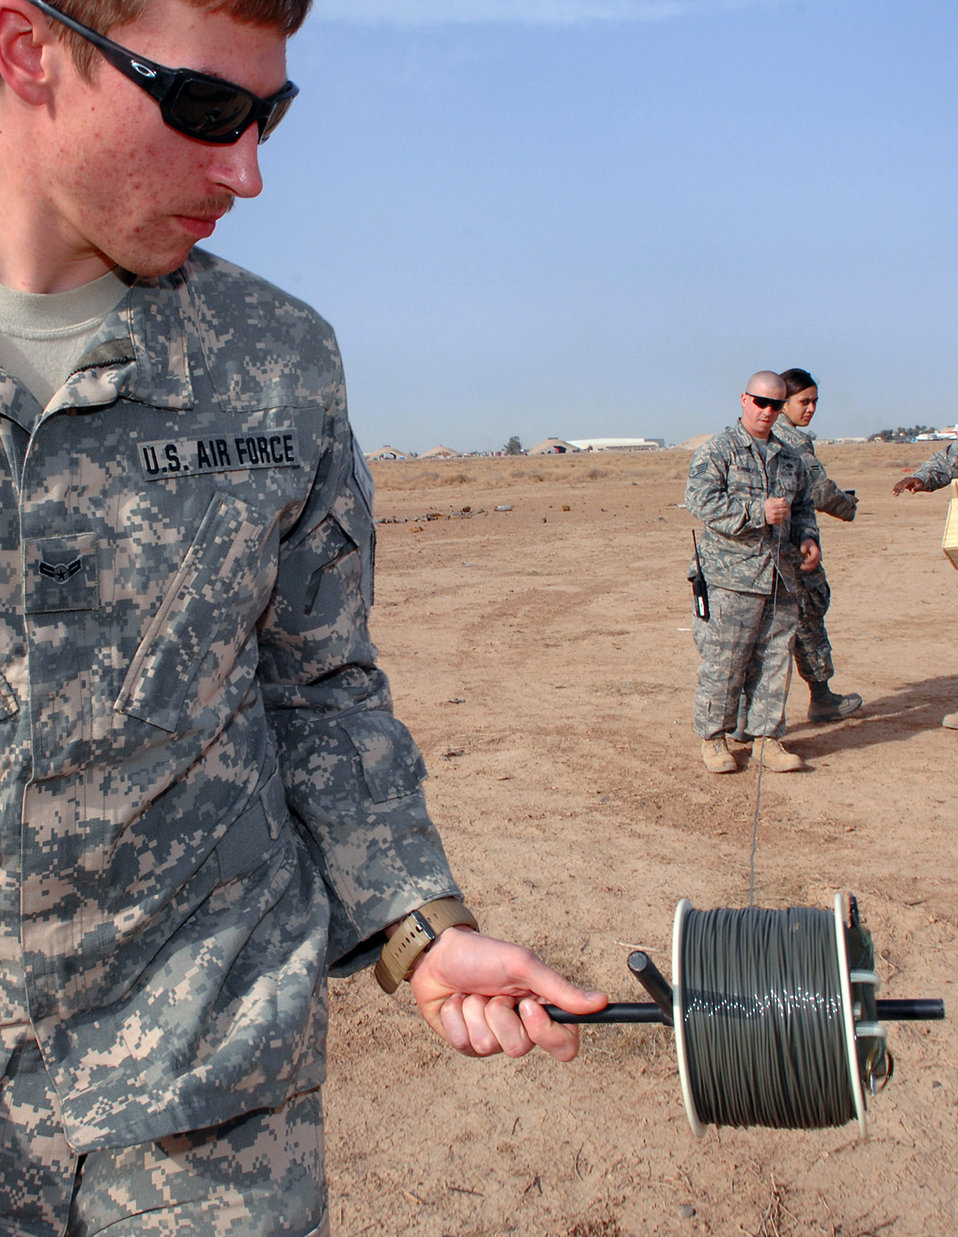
Blast off

Airman 1st Class Brian Dunnagan rolls out shock tubing March 13 at Balad Air Base, Iraq. The tubing is connected to unexploded ordnances and used to initiate the blast from a safe distance. Airman Dunnagan is a 332nd Expeditionary Civil Engineer Squadron explosive ordnance disposal technician deployed from Hurlburt Field, Fla.